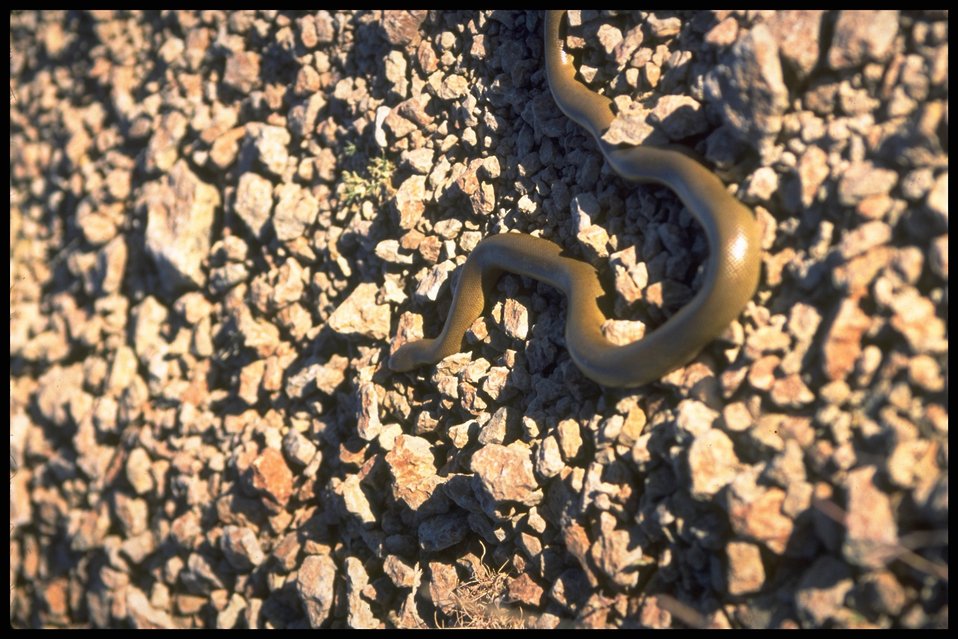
Rubber Boa, Lakeview District.